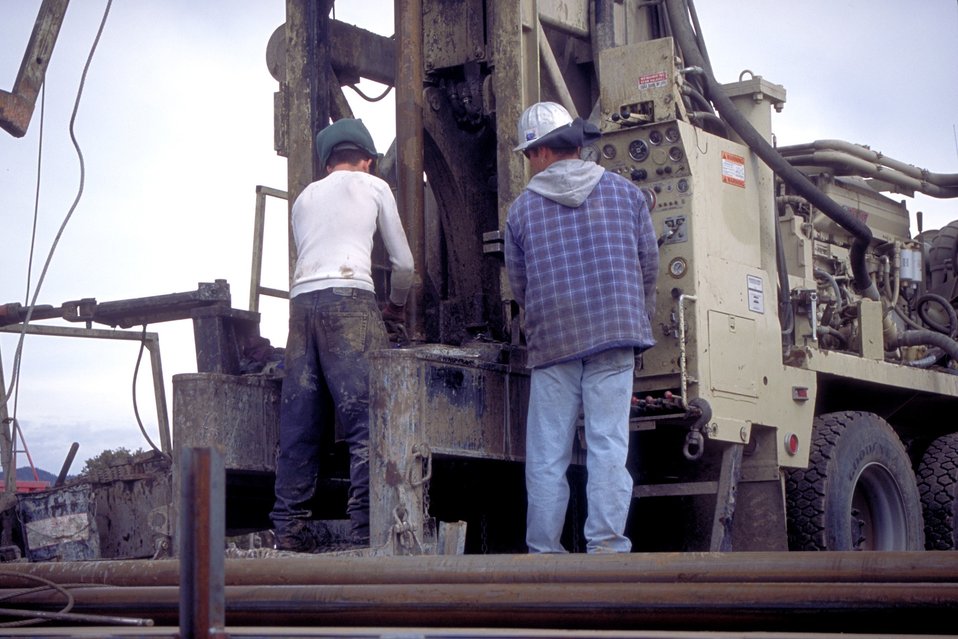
Drilling for coal bed methane near Price, Utah.